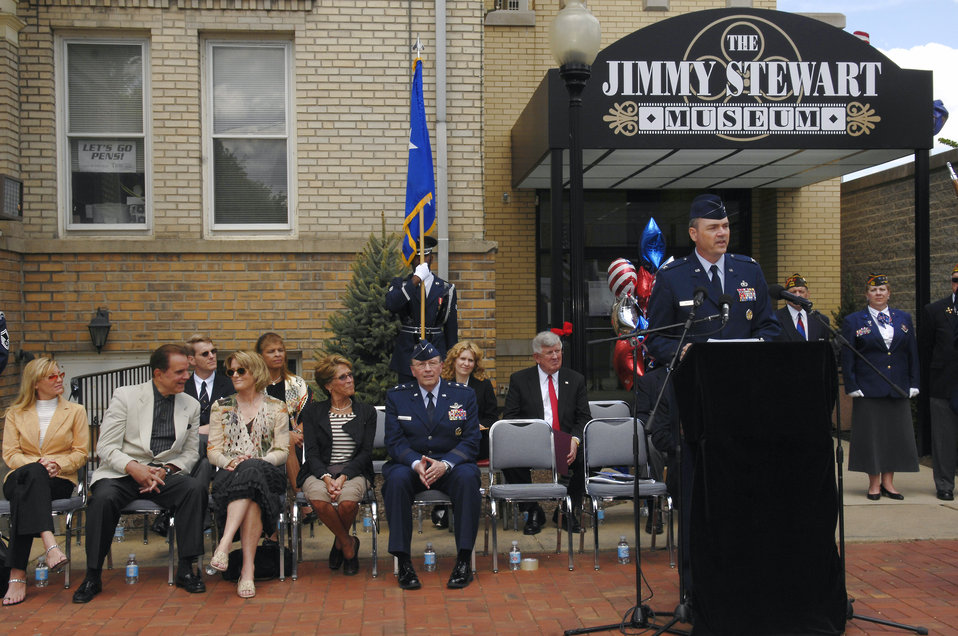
Bolling, Reserve officials honor famous actor, Airman

Col. Terry Ross speaks during the Jimmy Stewart Centenniel Celebration May 24 in Indiana, Pa. The famed actor flew bombing missions in World War II and became a brigadier general in the Air Force Reserve. Colonel Ross is the 11th Wing vice commander.